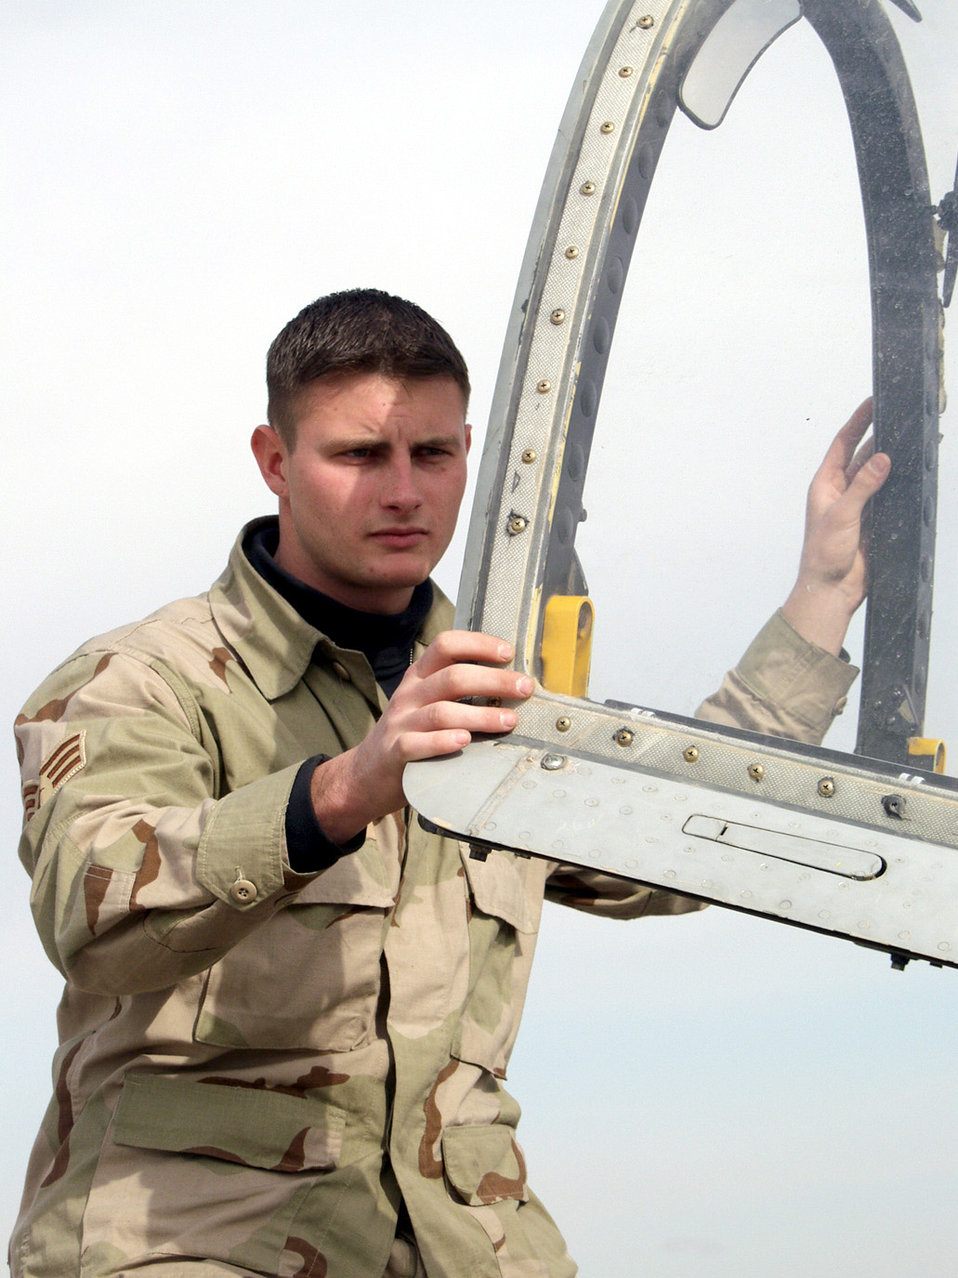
Crew chiefs keep A-10s flying

KIRKUK AIR BASE, Iraq -- Senior Airman Damon Ballard inspects a canopy seal on an A-10 Thunderbolt II here. He is a crew chief assigned to the 355th Expeditionary Aircraft Maintenance Squadron.